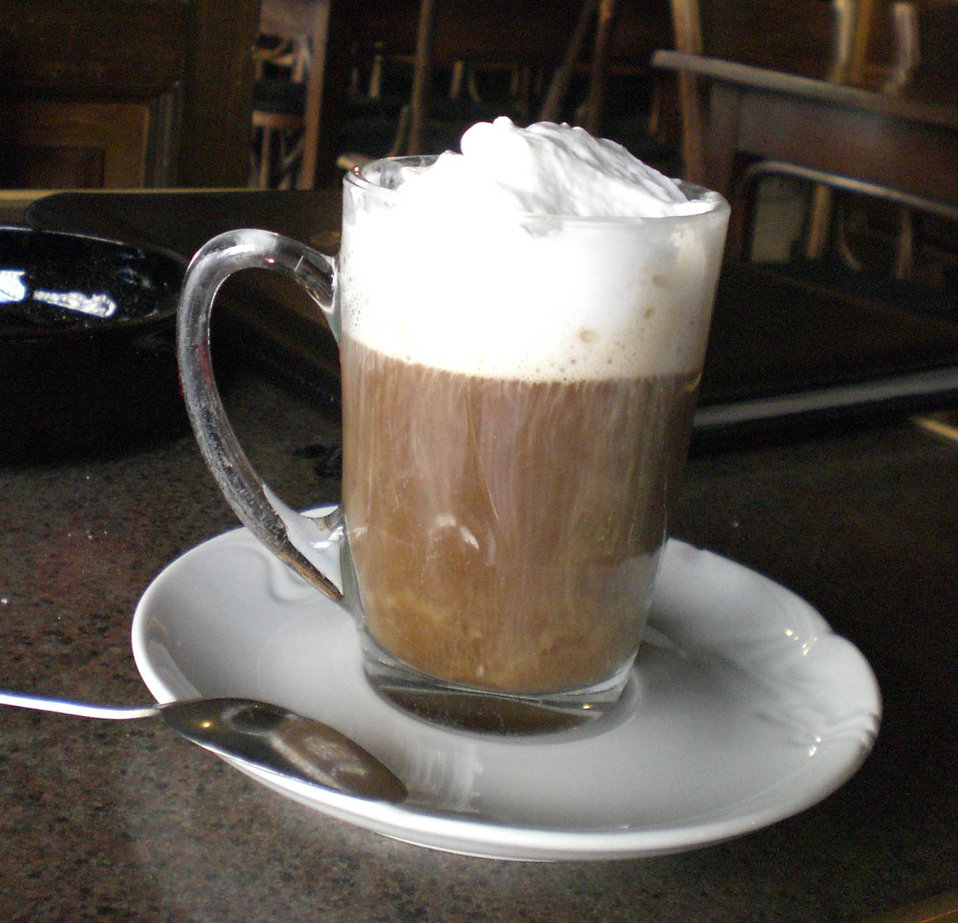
Taken by me in Prague